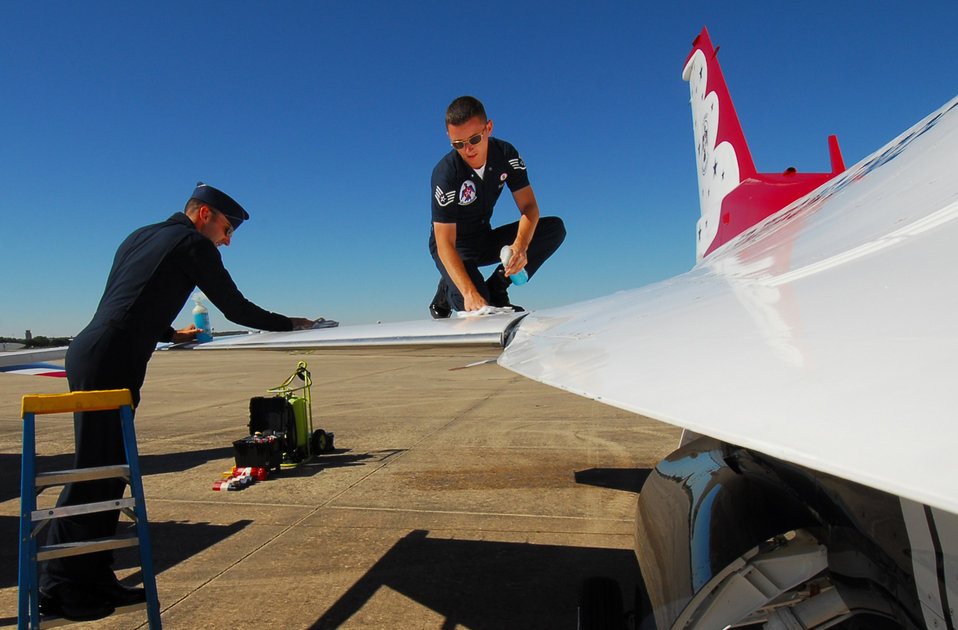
Thunderbird maintainers keep show running behind the scenes

Maj. David Lemery and Staff Sgt. Brandon Bingham touch up an Air Force Thunderbird F-16 Fighting Falcon during a pre-inspection Nov. 5, 2010, at Lackland Air Force Base, Texas. Major Lemery is the Thunderbirds maintenance officer and Sergeant Bingham is a Thunderbird assistant crew chief. The air demonstration team was at Lackland AFB to perform during AirFest 2010.